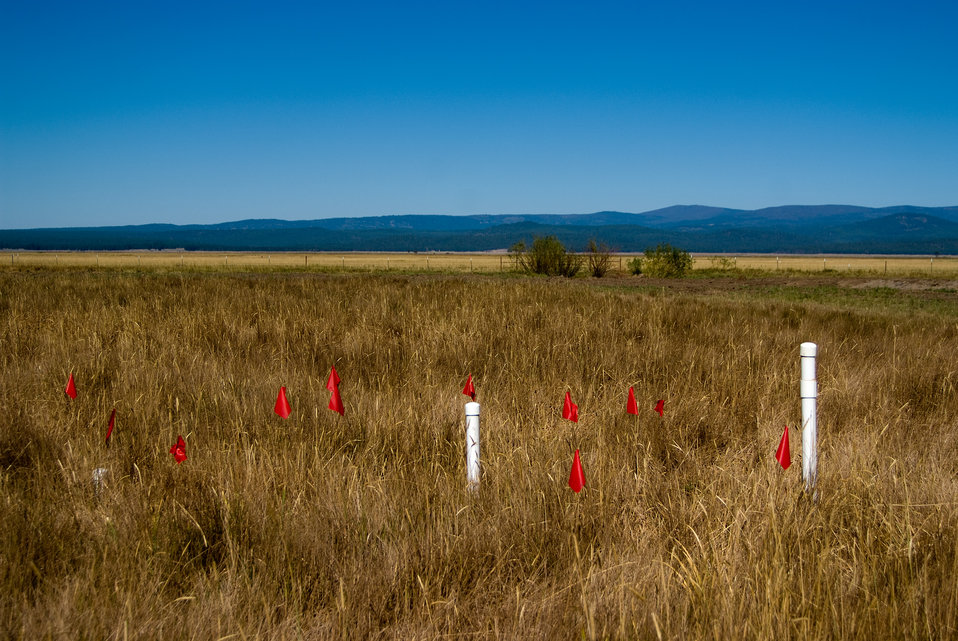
Chocktoot Delta Restoration Project

Restore geomorphic form and function of creek on Sycan Marsh to accommodate year-round fish passage of Red band trout, bull trout, Klamath speckled dace and Native chub. This project was funded in part by the American Recovery and Reinvestment Act of 2009.